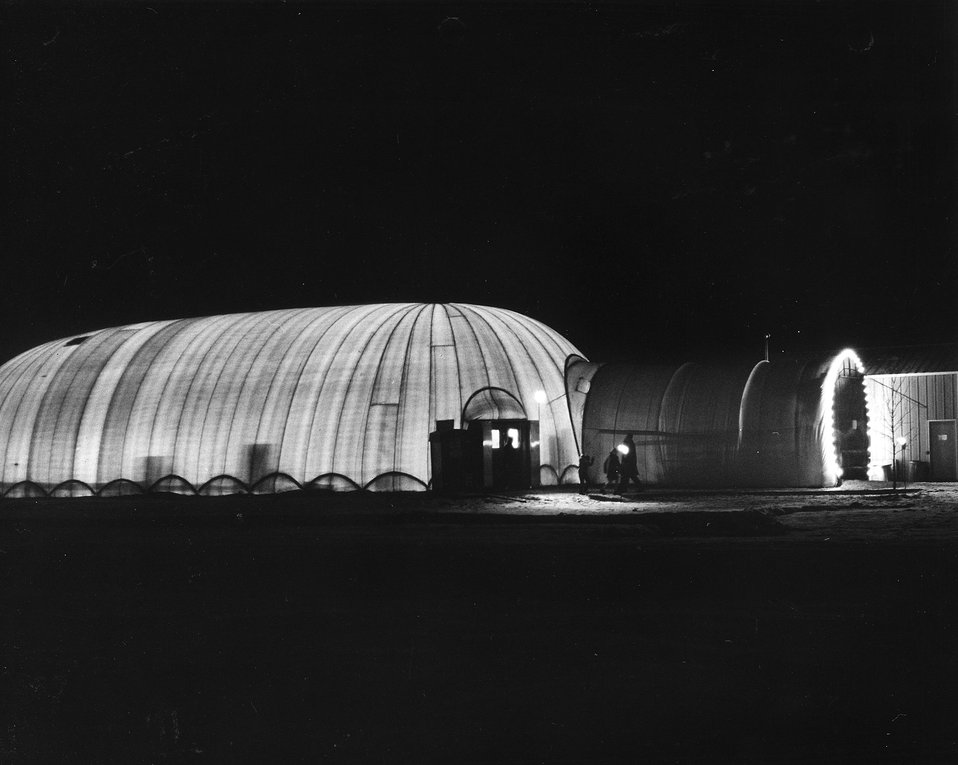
The inflatable air building which houses the working models and machine shop for the main accelerator. 1968